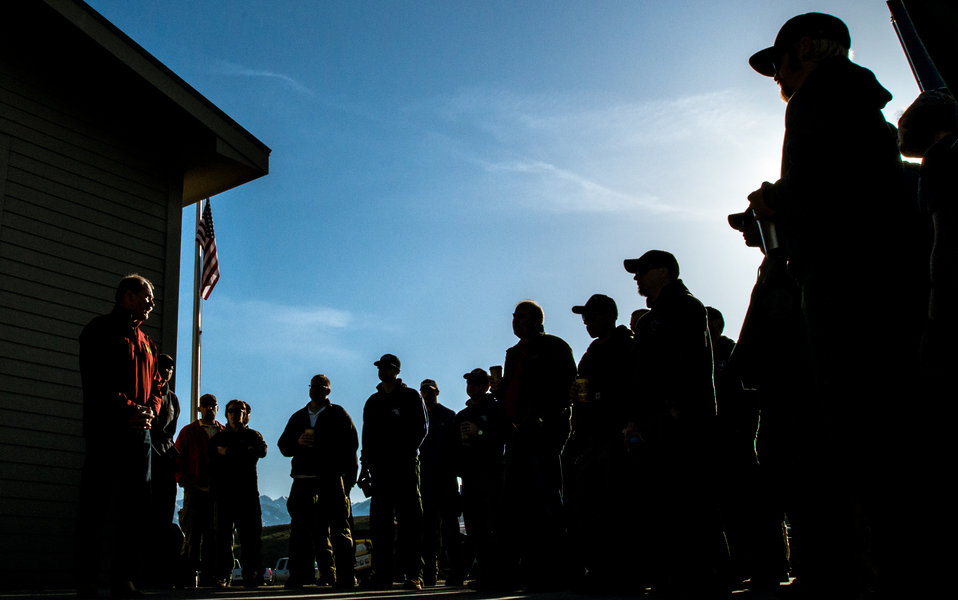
Veteran wildland firefighter rappellers pay attention to the morning meeting at the U.S. Department of Agriculture (USDA) U.S. Forest Service (USFS) National Helicopter Rappel Program’s Rappel Academy at Salmon Air Base in Salmon, ID on Wednesday, May 14, 2014. From May 12, 2014, 72 veteran rappellers from all over the nation, 30 support staff, and three helicopters with flight crews attend the training at Salmon Air Base. Participants will rappel into the Perreau Creek area. The annual training is delivered in accordance with the National Rappel Operations Guide; strengthen leadership, teamwork, and communications within the rappel community, and produces quality aerial delivered firefighters for use in fire and aviation operations. The USDA Forest Service National Helicopter Rappel Program’s primary mission is initial attack. Rappel crews may be utilized for large fire support, all hazard incident operations, and resource management objectives.